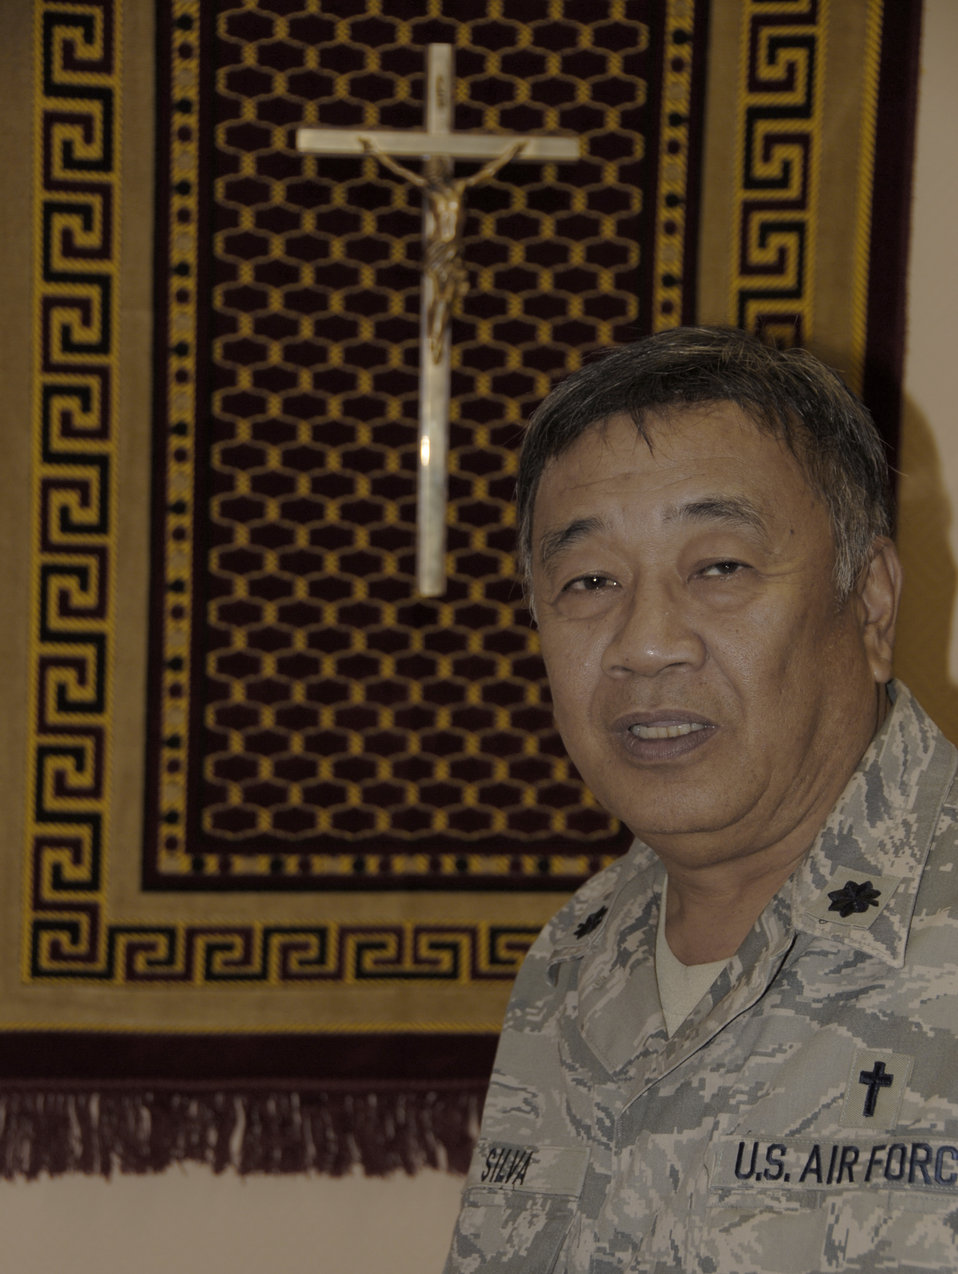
Circuit-riding chaplains rack up frequent flyer miles

Chaplain (Lt. Col.) Caesar Silva poses in his base office Feb. 22, 2011. Chaplain Silva is a 379th Expeditionary Wing chaplain. Chaplain Silva travels to different locations throughout Iraq and Afghanistan on a weekly basis to meet the spiritual needs of service members downrange.